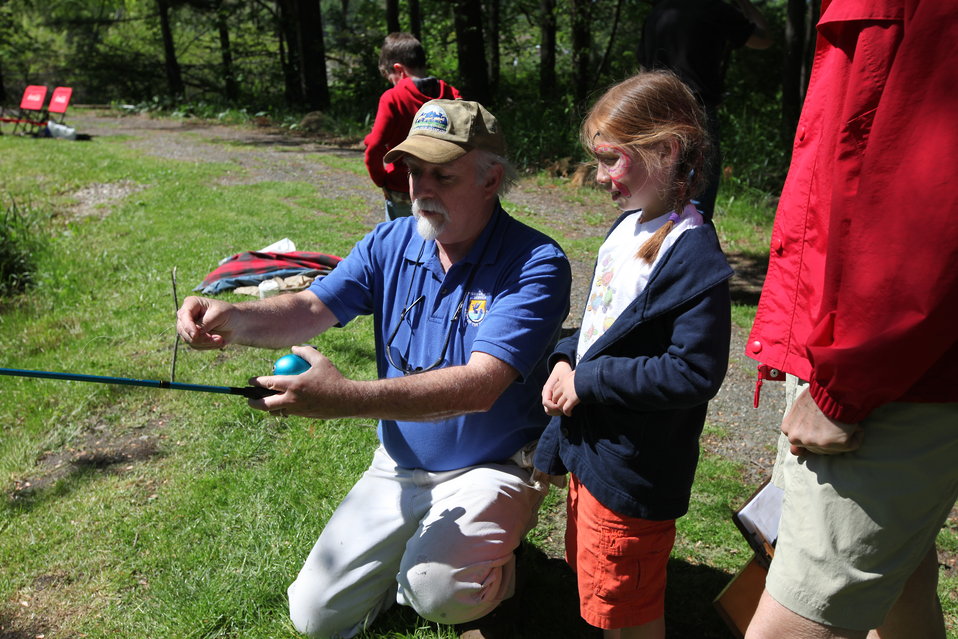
Youth Fishing Derby 2012

Megan Nagel/USFWS